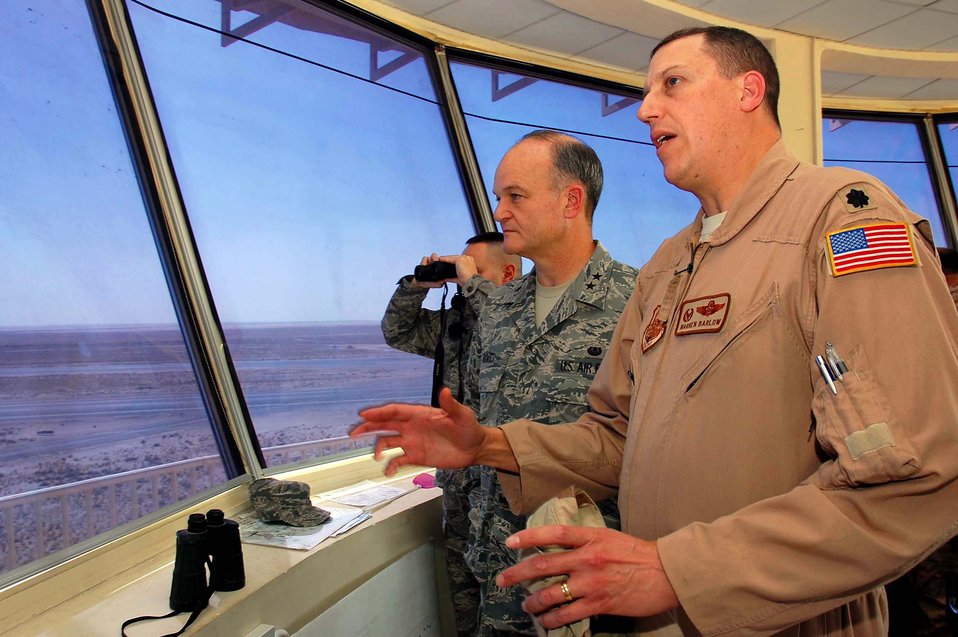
Top JAG visits deployed Airmen

Maj. Gen. Jack L. Rives discusses airfield operations with Lt. Col. Warren Barlow at an undisclosed location Nov. 8 in Southwest Asia. General Rives' visit included reviewing the 386th Air Expeditionary Wing's legal programs and meeting with deployed Airmen from units around the world. Geeral Rives is the Air Force judge advocate general and Colonel Barlow is the 386th Air Expeditionary Operations Support Squadron commander.